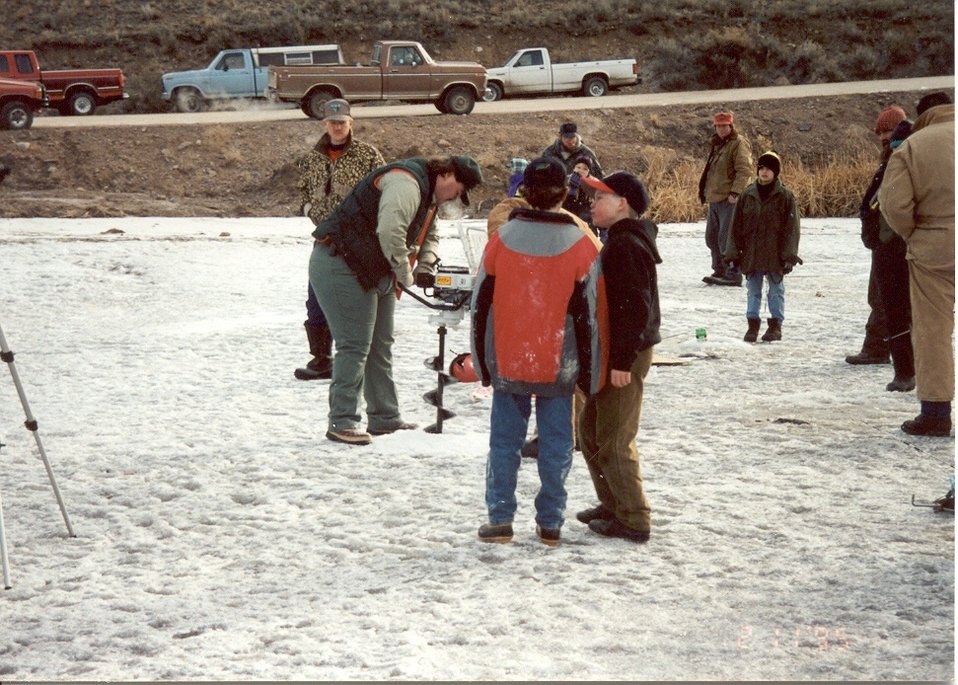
Ice Fishing Derby Salmon Idaho Salmon Field Office UCSC Upper Columbia Salmon Clearwater District